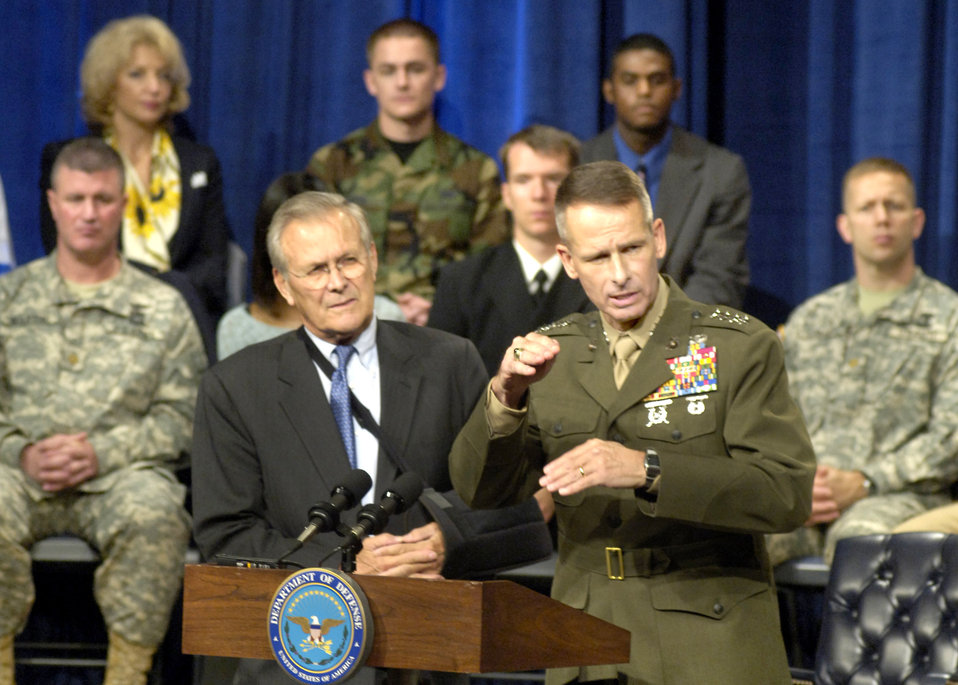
Marine corporal questions war coverage

Secretary of Defense Donald H. Rumsfeld and Chairman of the Joint Chiefs of Staff Marine Corps Gen. Peter Pace field questions from an audience in the Pentagon auditorium during a town hall meeting Sept. 22. The town hall format allows Pentagon personnel, both civilian and military, to ask questions of their most senior leaders.